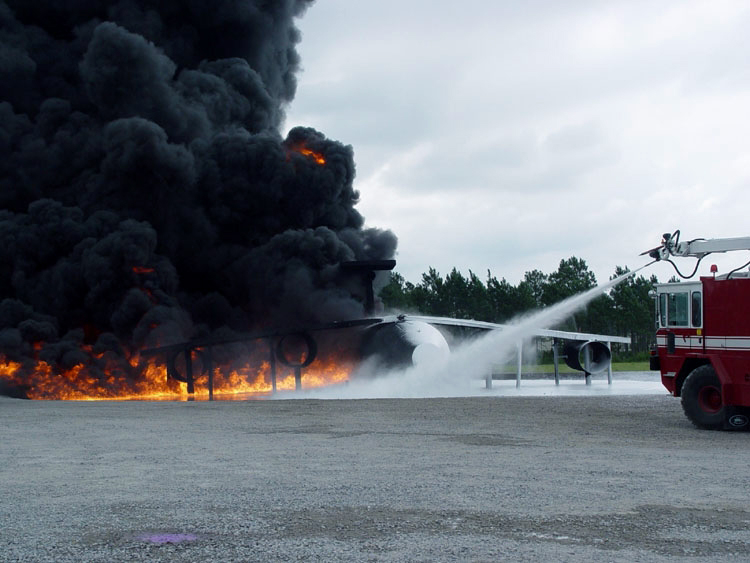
AFRL tests new firefighting technology

TYNDALL AIR FORCE BASE, Fla. -- Firefighters here train using a new method to extinguish fires. The new method, developed by the Air Force Research Laboratory's deployed base systems branch, combines high pressures with water and aqueous film-forming foam.